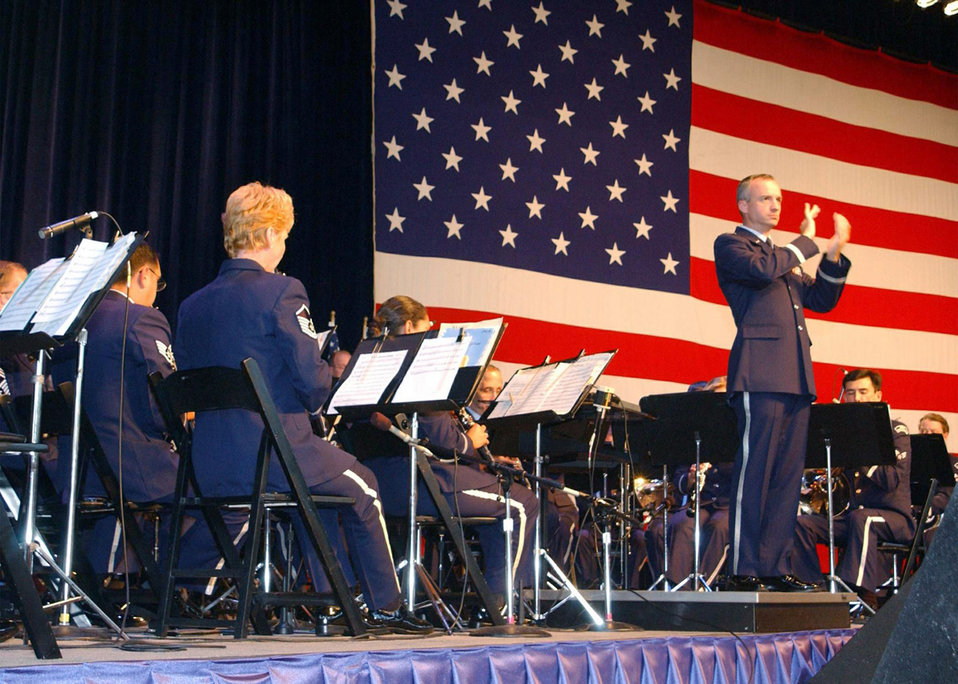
Tribute

SAN ANTONIO -- Members of the Lackland Air Force Base, Texas, Air Force Band of the West perform at Six Flags Fiesta Texas Sept. 25 in tribute to those affected by terrorist attacks Sept. 11. The band played patriotic music alongside big names in entertainment
including Lee Greenwood and Larry Gatlin. The event, sponsored by the Professional Golfers' Association was televised and broadcast nationally.